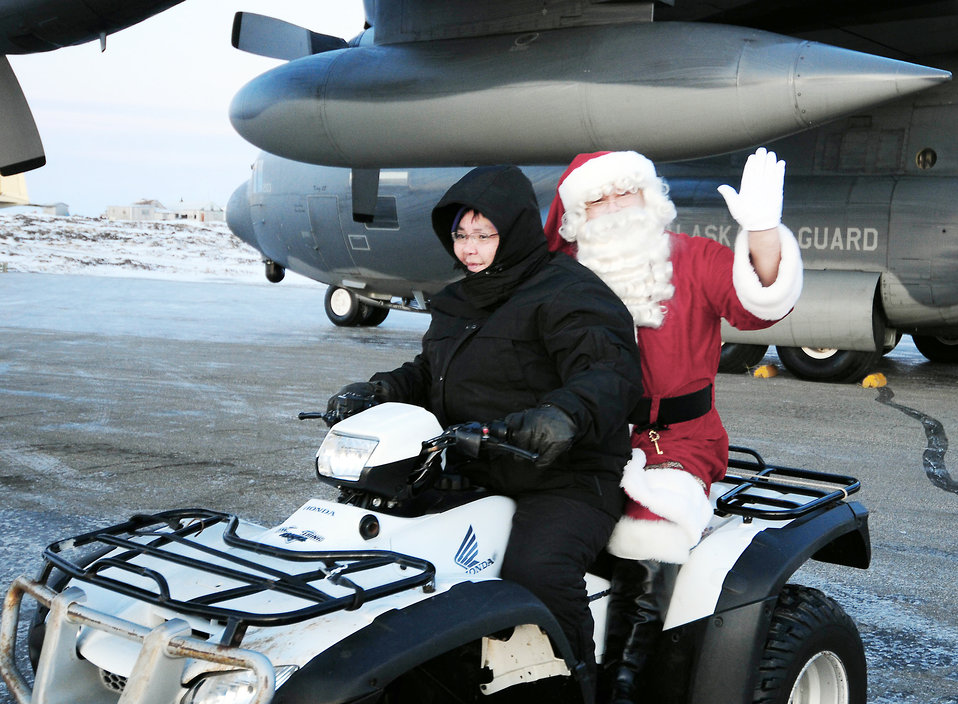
Santa gets a lift from his